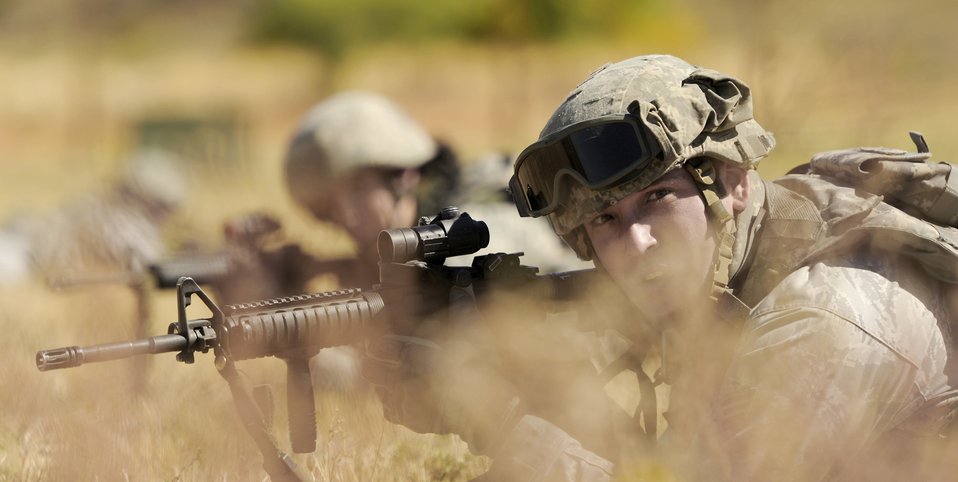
Combat Readiness Training

Senior Airman Ryan Nelson participates in tactical movement drills during the 75th Security Forces Combat Readiness Training course Sept. 22, 2010, at Hill Air Force Base, Utah. The course teaches Airmen basic tactical movements, land navigation and self aid buddy care.